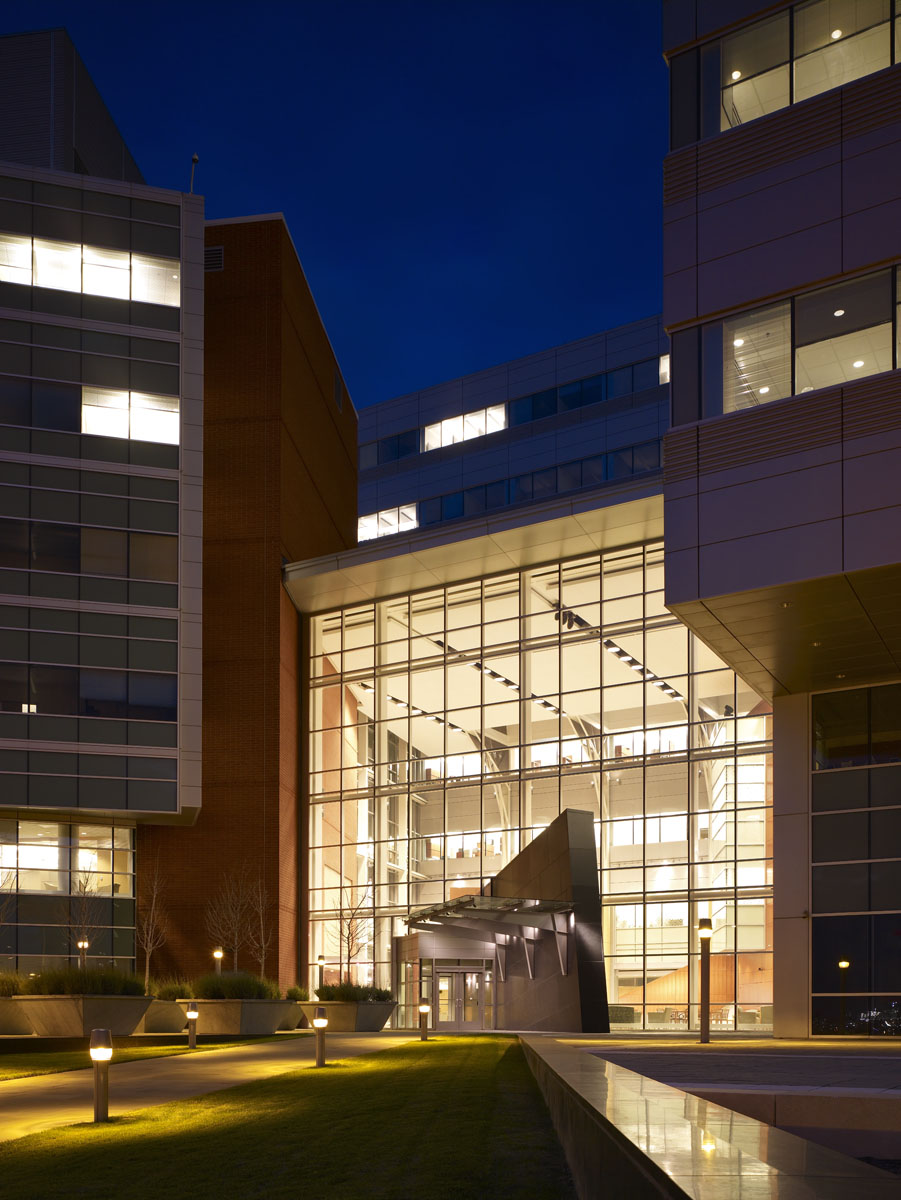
IRP exterior